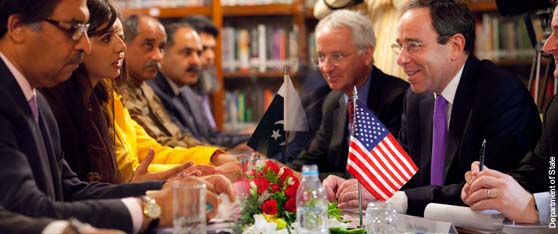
Deputy Secretary Nides Meets With Pakistani Foreign Minister Hina Rubani

U.S. Deputy Secretary of State Thomas Nides meets with Pakistani Foreign Minister Hina Rabbani Khar at the Pakistani Ministry of Foreign Affairs in Islamabad, Pakistan, on April 4, 2012.